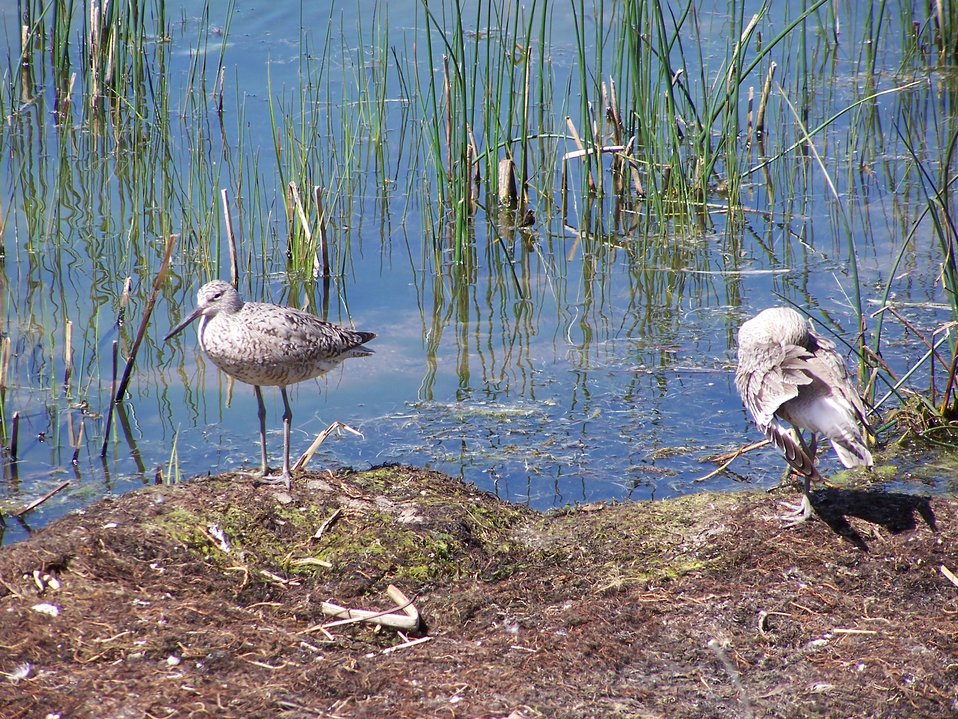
Willet in Spring

Willet enjoying a spring day at Bowdoin NWR.